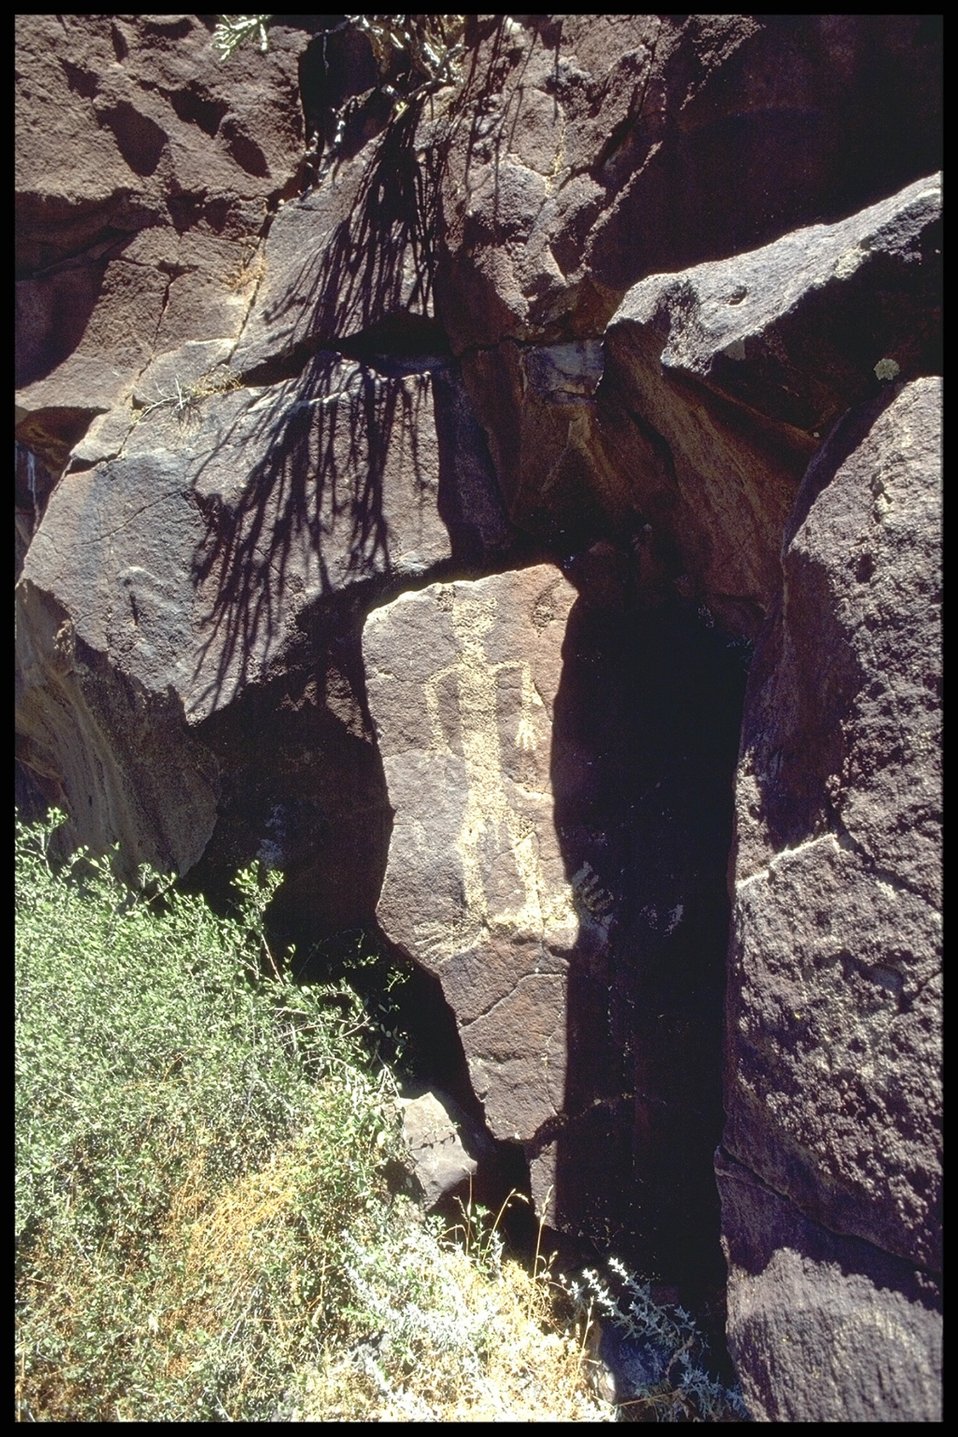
Petroglphs (Rock Art) can be found throughout the 71,000 Acres that make up the Agua Fria National Monument.